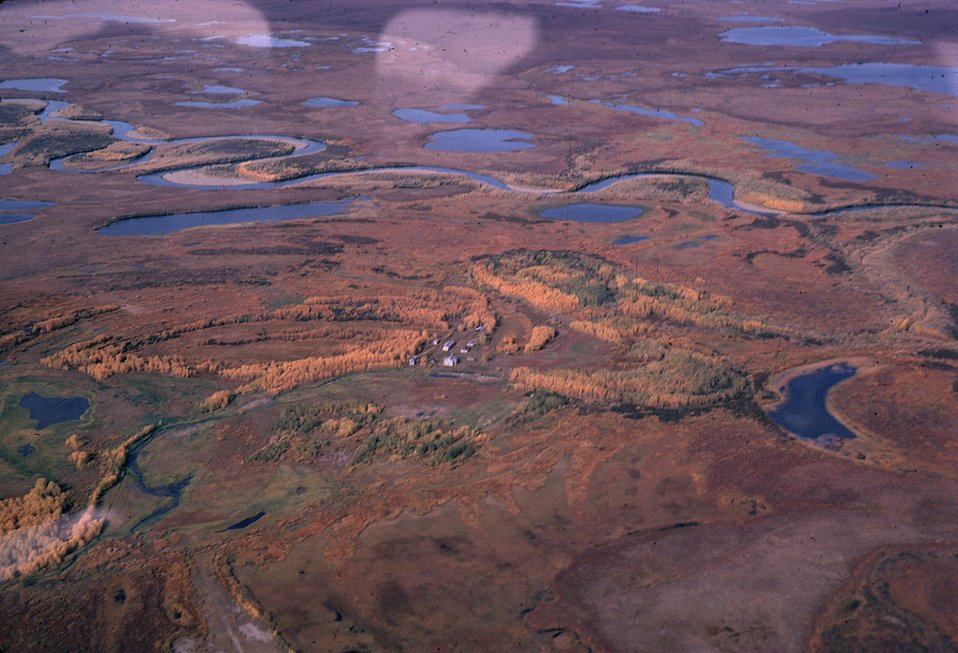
Aerial view of Pilgrim Springs area, Seward Peninsula